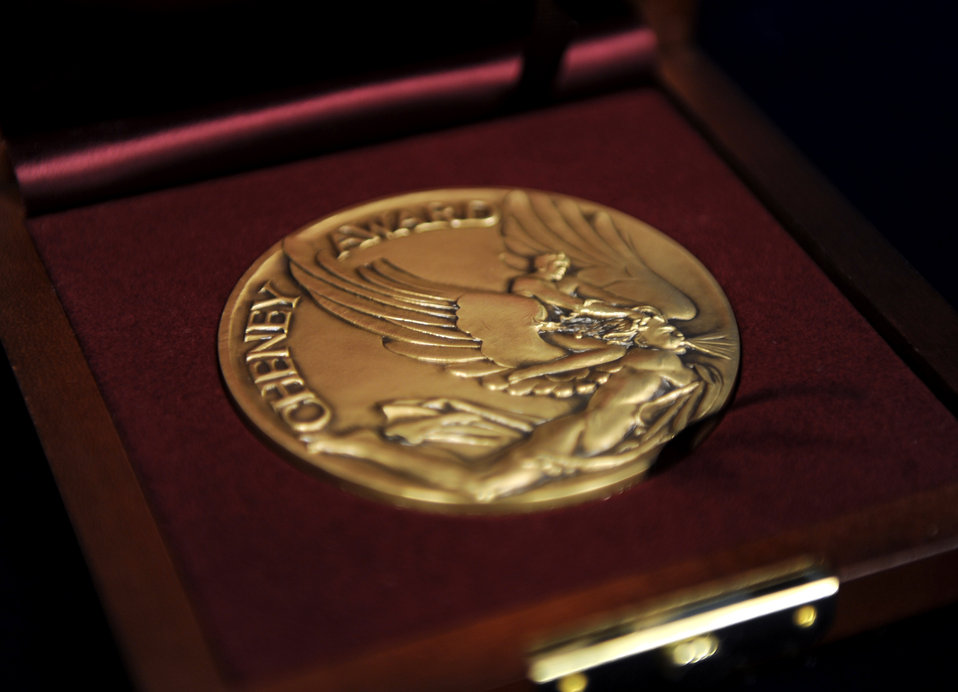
Cheney Award

Maj. John D. Foy IV and Capt. Patrick Markey each received a Cheney
Award Medallion Oct. 27, 2011, during a ceremony at the Pentagon.